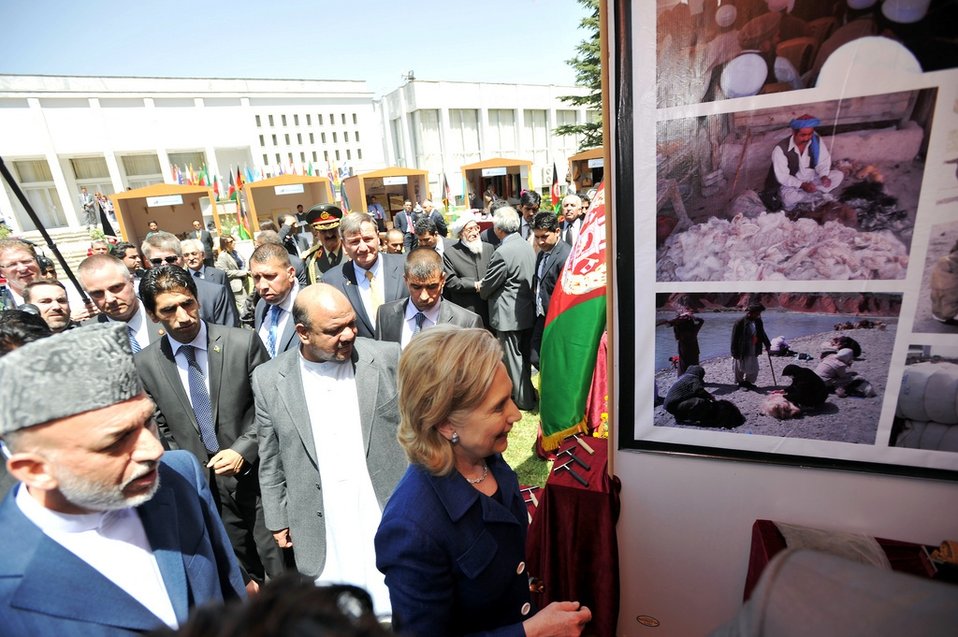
Secretary Clinton and Afghan President Karzai Tour an Afghan Cultural and Business Exhibition

U.S. Secretary of State Hillary Rodham Clinton and Afghan President Hamid Karzai tour an Afghan cultural and business exhibition on the grounds of the Foreign Ministry during the Kabul Conference in Kabul, Afghanistan, on July 20, 2010.